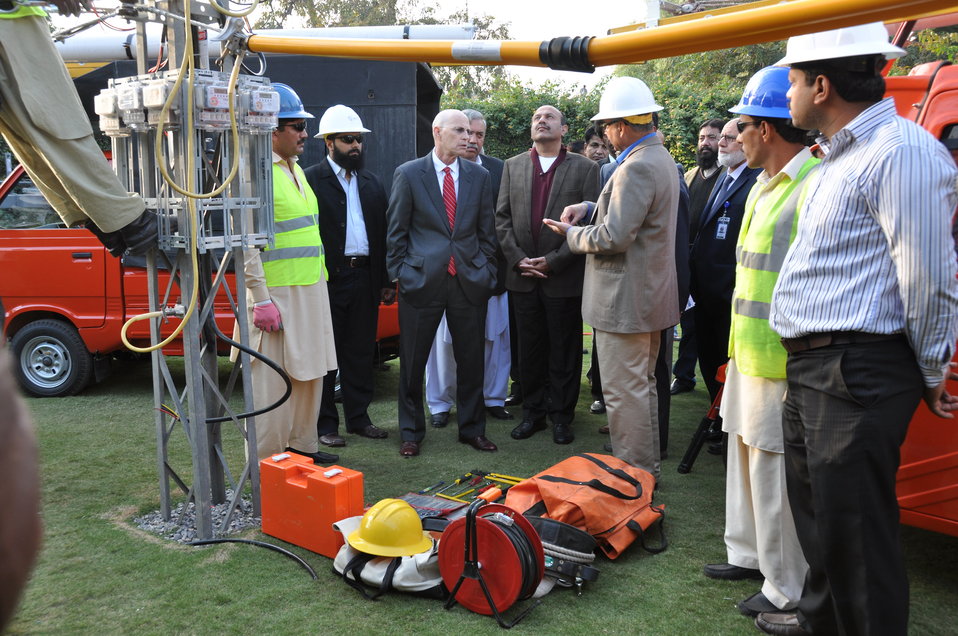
United States Government Strengthens PESCO Field Operations 01